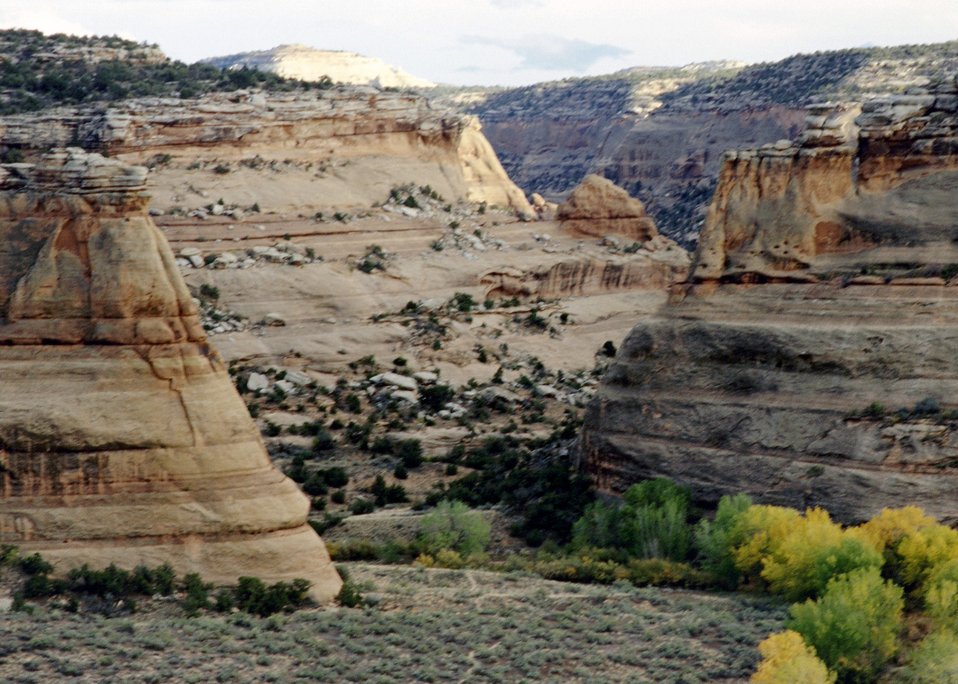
Canyon Fall (Colors)